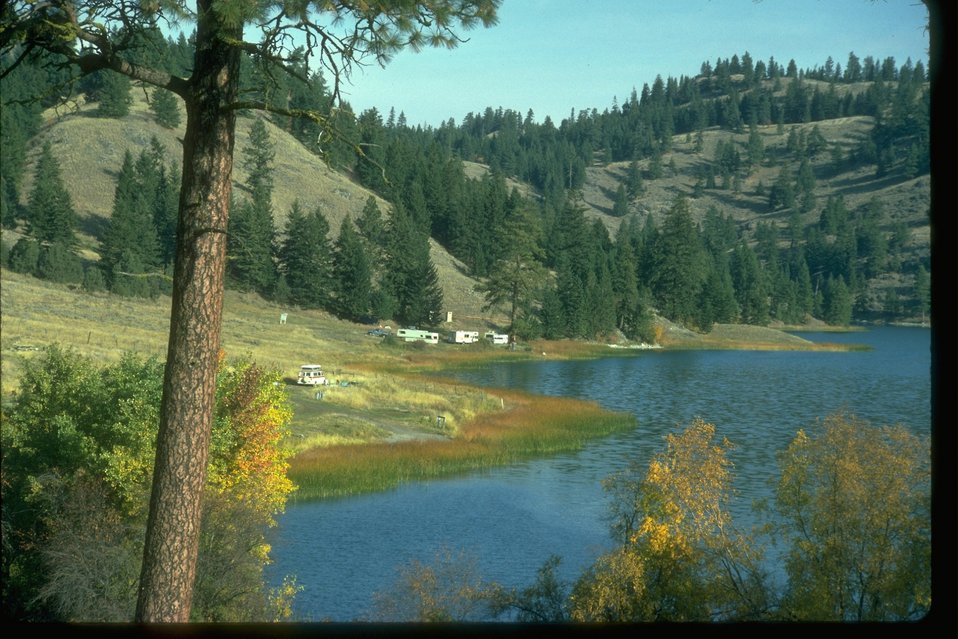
Chopaka Lake campground in Okanogan County, WA.